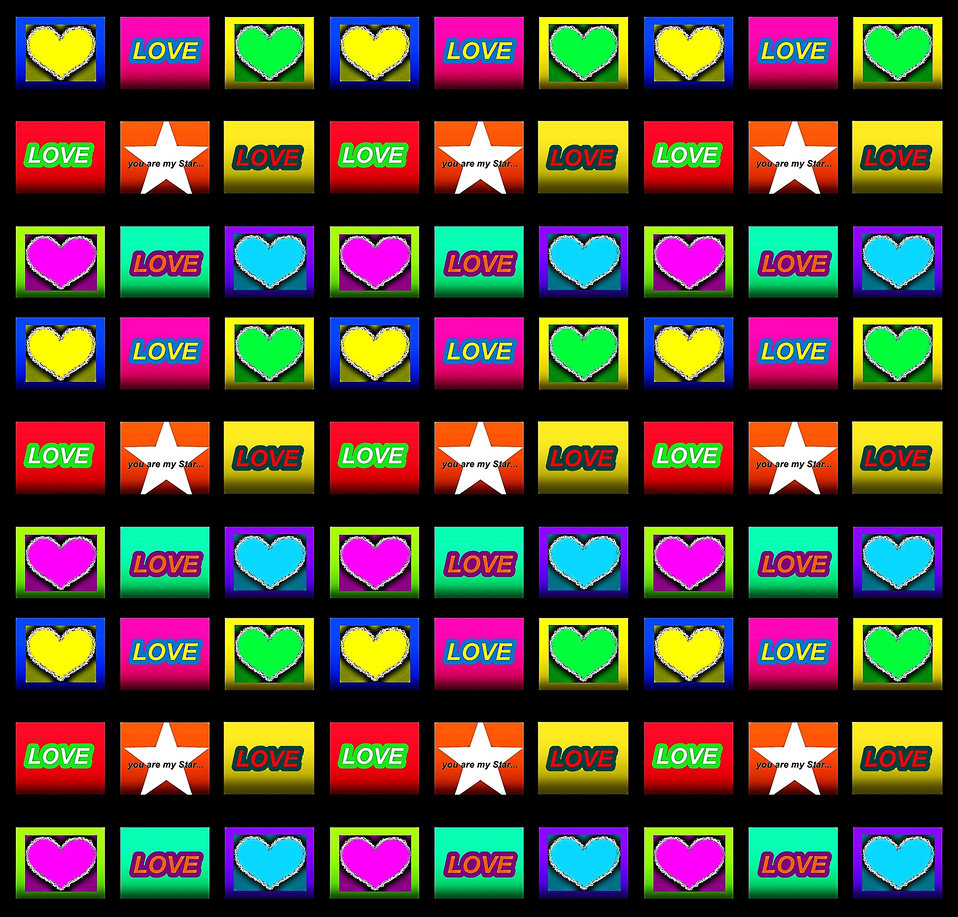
You are my star

Background.